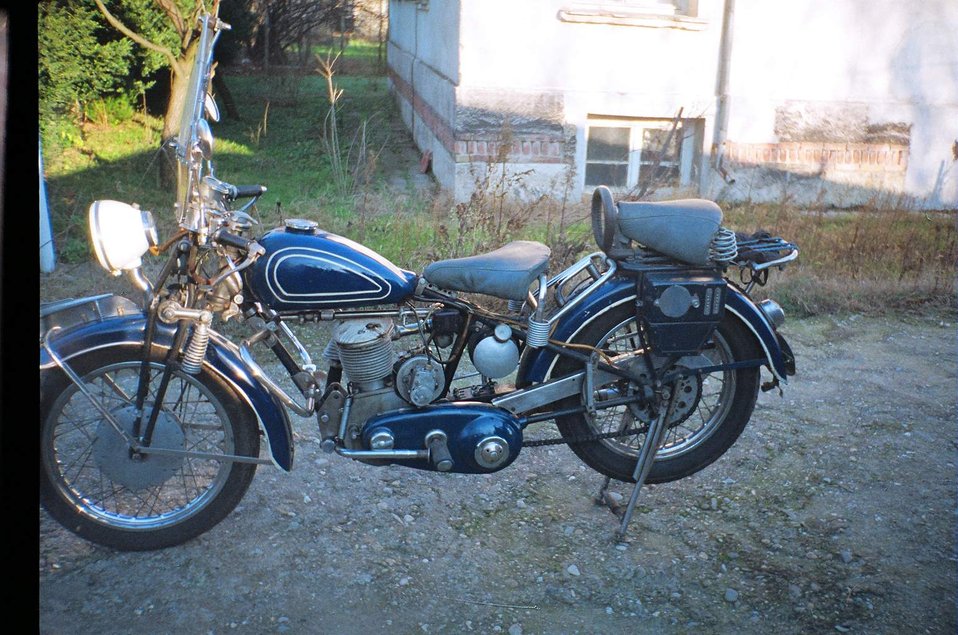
my motorcycle from my yahoo picture site